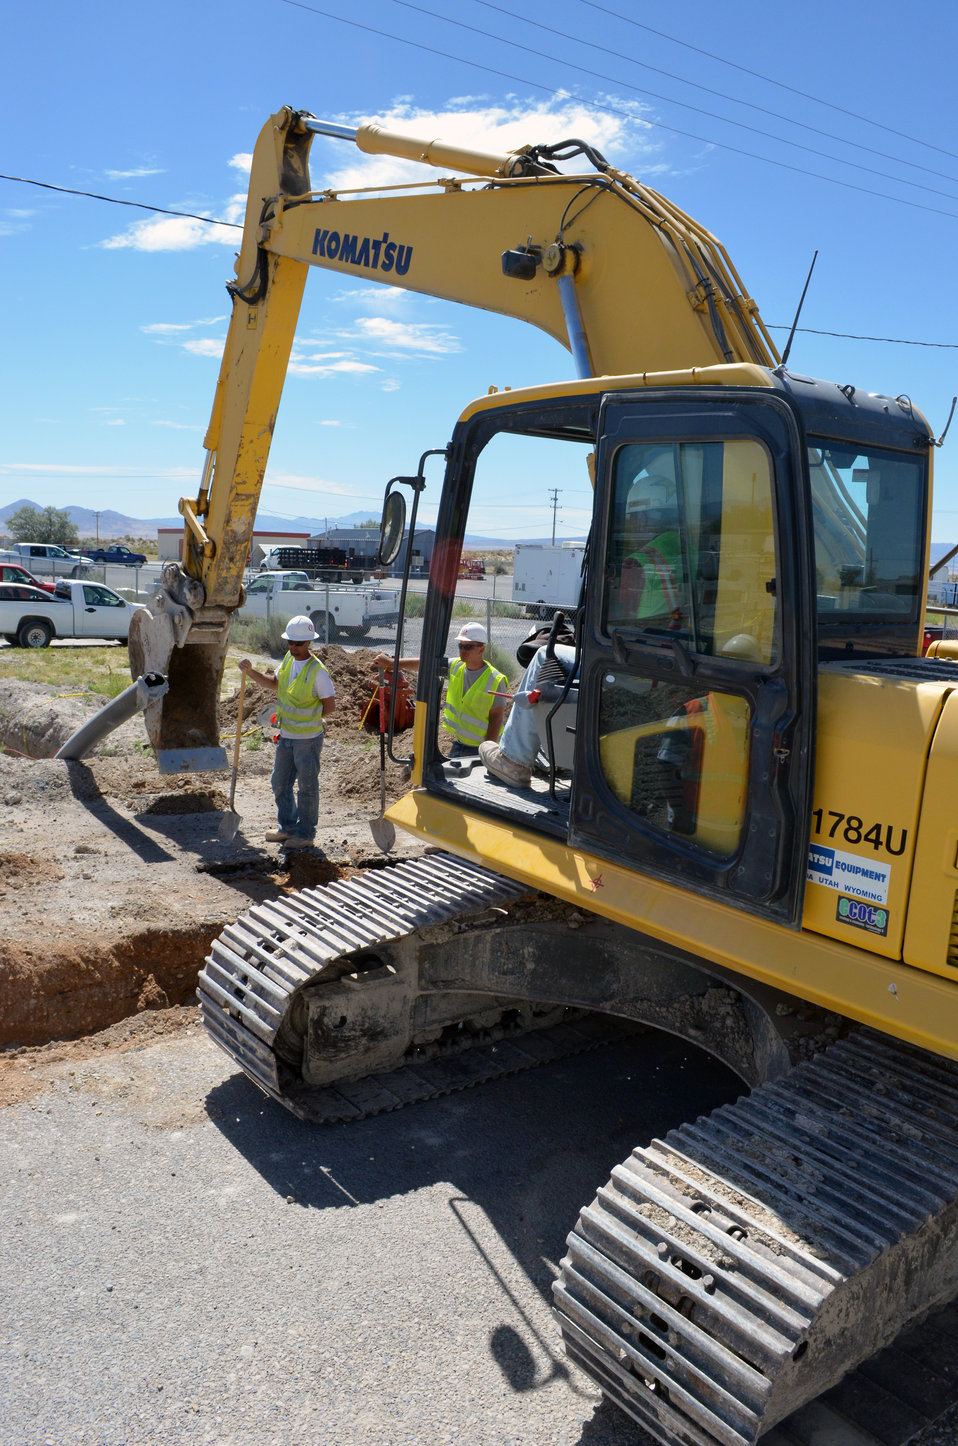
Water system project continues at Dugway Proving Grounds

Contractors for the U.S. Army Corps of Engineers Sacramento District excavate a trench for new water lines at Dugway Proving Grounds, Utah, June 21, 2012. The work is part of an $11 million project to provide a new potable water system to the installation.